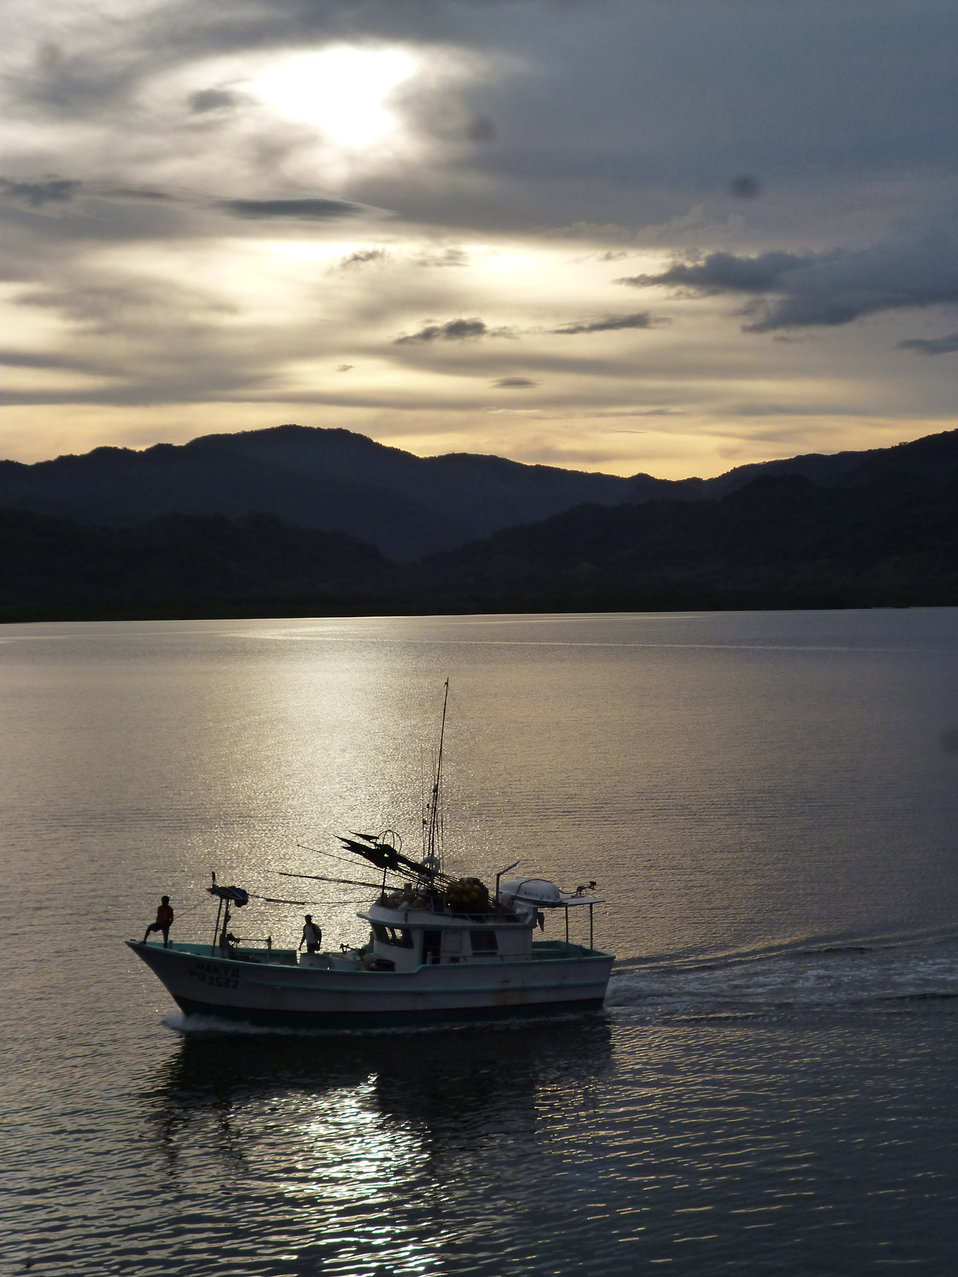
Fishing boat.